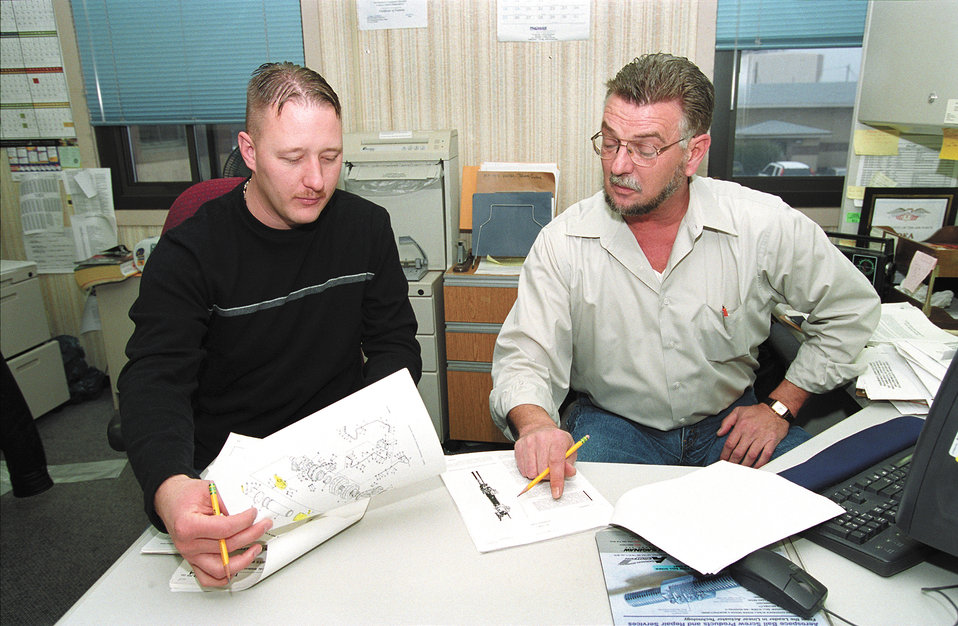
Getting an 'IDEA'

TINKER AIR FORCE BASE, Okla. -- Michael Simmons (left) and Calvin Haugen earned $10,000 under the Innovative Development through Employee Awareness program. The two men recommended the Air Force not digitize technical orders for the C-141 Starlifter, an aircraft system headed toward retirement. The suggestion saved the Air Force an estimated $141,340. Both men are assigned to the logistics directorate's accessories division here.